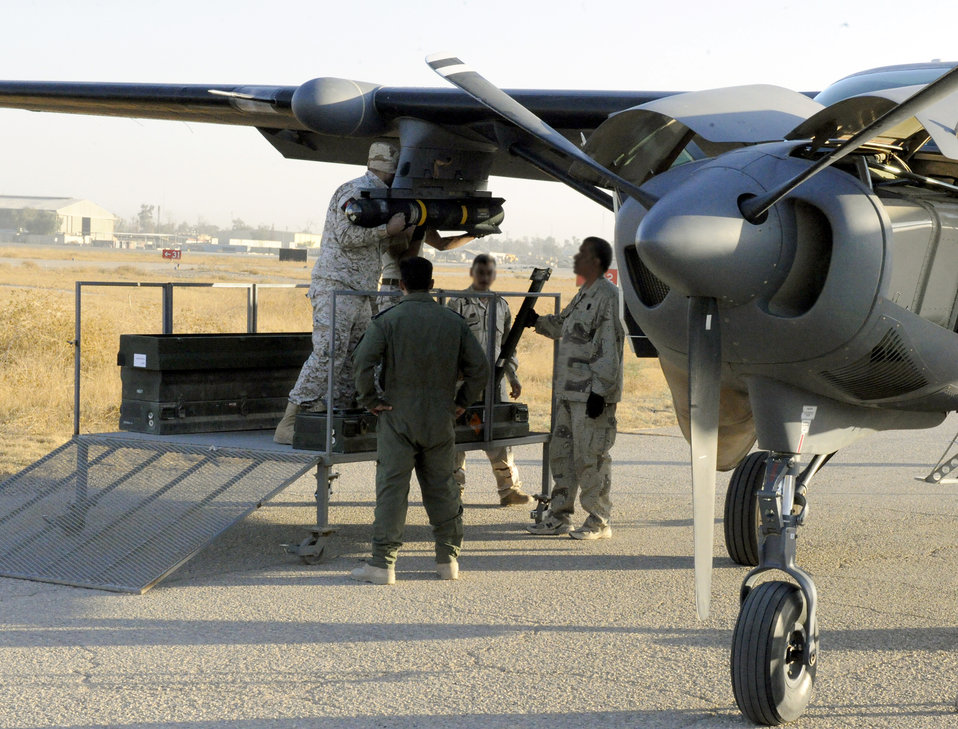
Iraqi airmen demonstrate operational capabilities in Hellfire exercise

An Iraqi air force maintenance officer briefs weapons load checklist procedures to Tech. Sgt. Joseph Sparlin and Maj. Matthew Goddard, before a Hellfire missile launch training mission Nov. 8, 2010, in Iraq. An all-Iraqi aircrew scored a direct hit of their target on the Aziziyah Range, south of Baghdad, destroying the target in their second launch of a Hellfire missile. Iraqi airmen have trained continuously for the Hellfire mission, mastering the weapons load, target attack and airmanship skills necessary to maintain proficiency since completing their first Hellfire launch in 2009, also resulting in a direct hit of a training target. Sergeant Sparlin and Major Goddard are Air Force air advisers with the 521st Air Expeditionary Advisory Squadron at Kirkuk work.